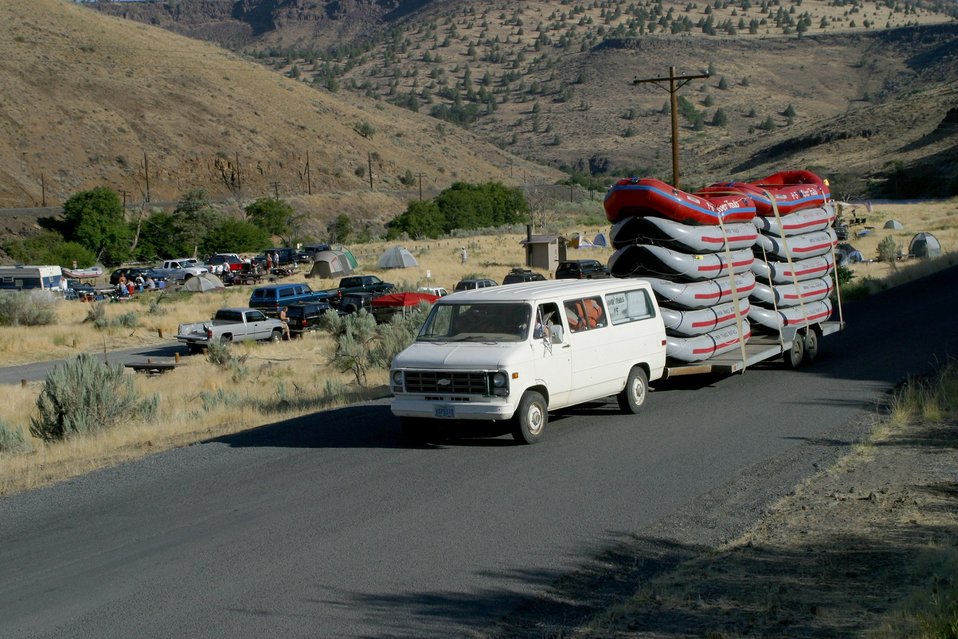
Campground at Harpham Flat boat ramp.